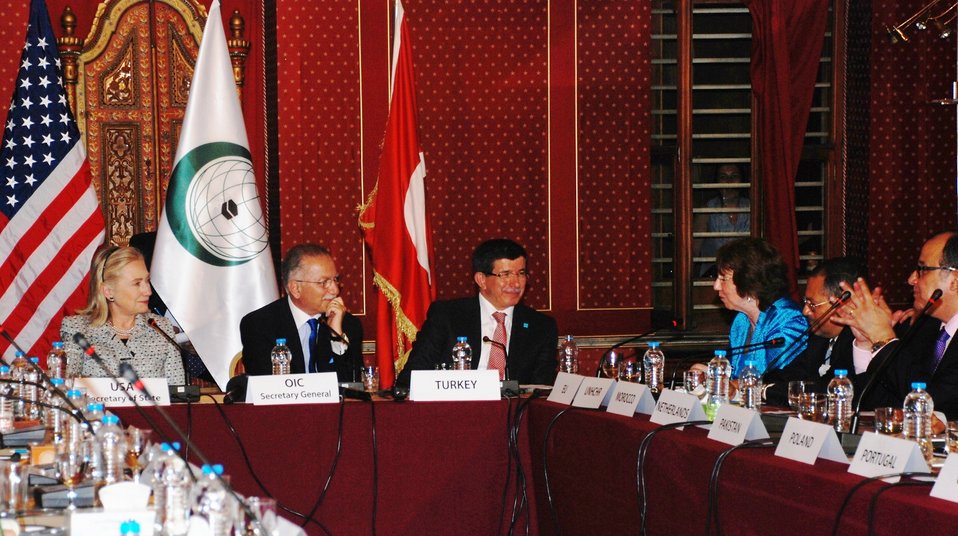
Secretary Clinton Participates in the Organization of Islamic Cooperation (OIC) Conference

U.S. Secretary of State Hillary Rodham Clinton participates in the Organization of Islamic Cooperation (OIC) Conference on “Building on the Consensus” at the Research Center for Islamic History, Art and Culture (IRCICA) in Istanbul, Turkey, on July 15, 2011.